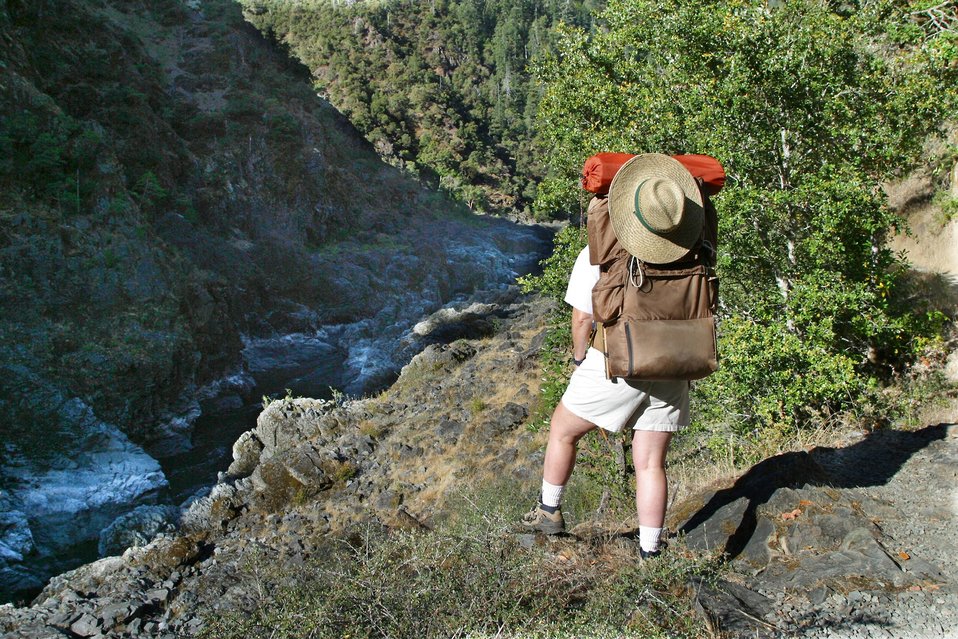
Hiking the Rogue River Trail between Mule Creek and Blossom Rapids.